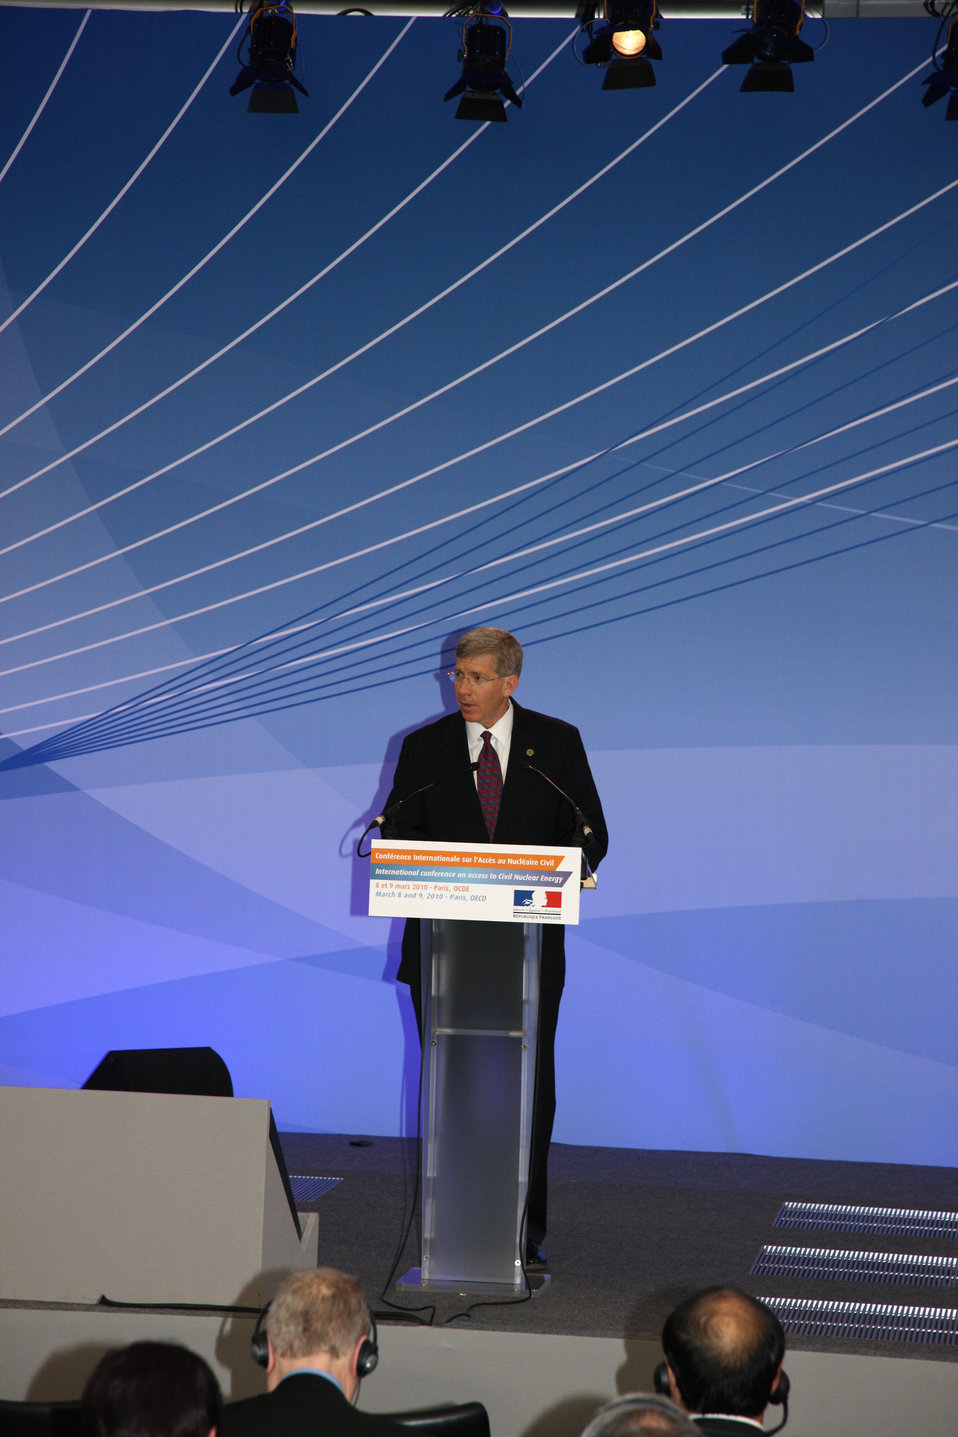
5C3K3689 copy